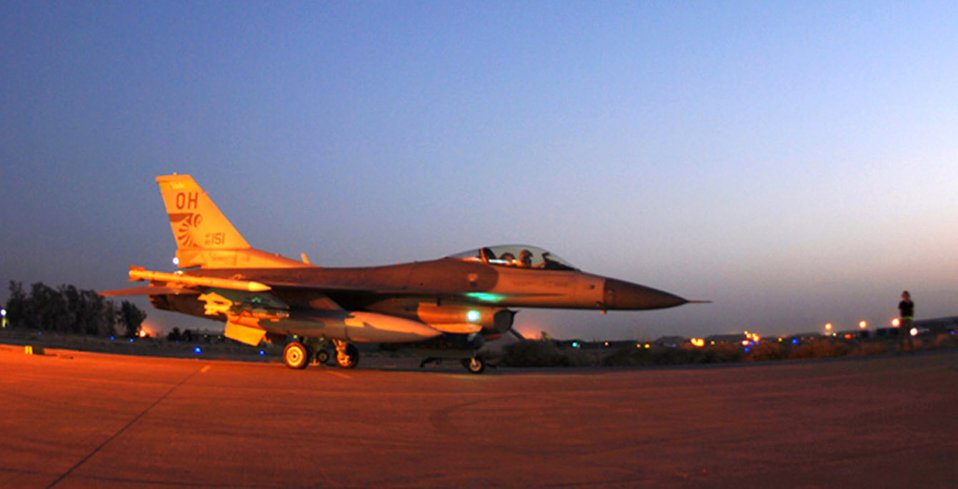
Airpower Summary for July 31, 2007

An F-16 Fighting Falcon taxis out for a night operation at Balad Air Base Iraq. F-16s fly close-air-support sorties for Operation Iraqi Freedom. F-16s and other coalition aircraft contributed to the 49 close-air-support missions flown over Iraq July 31.